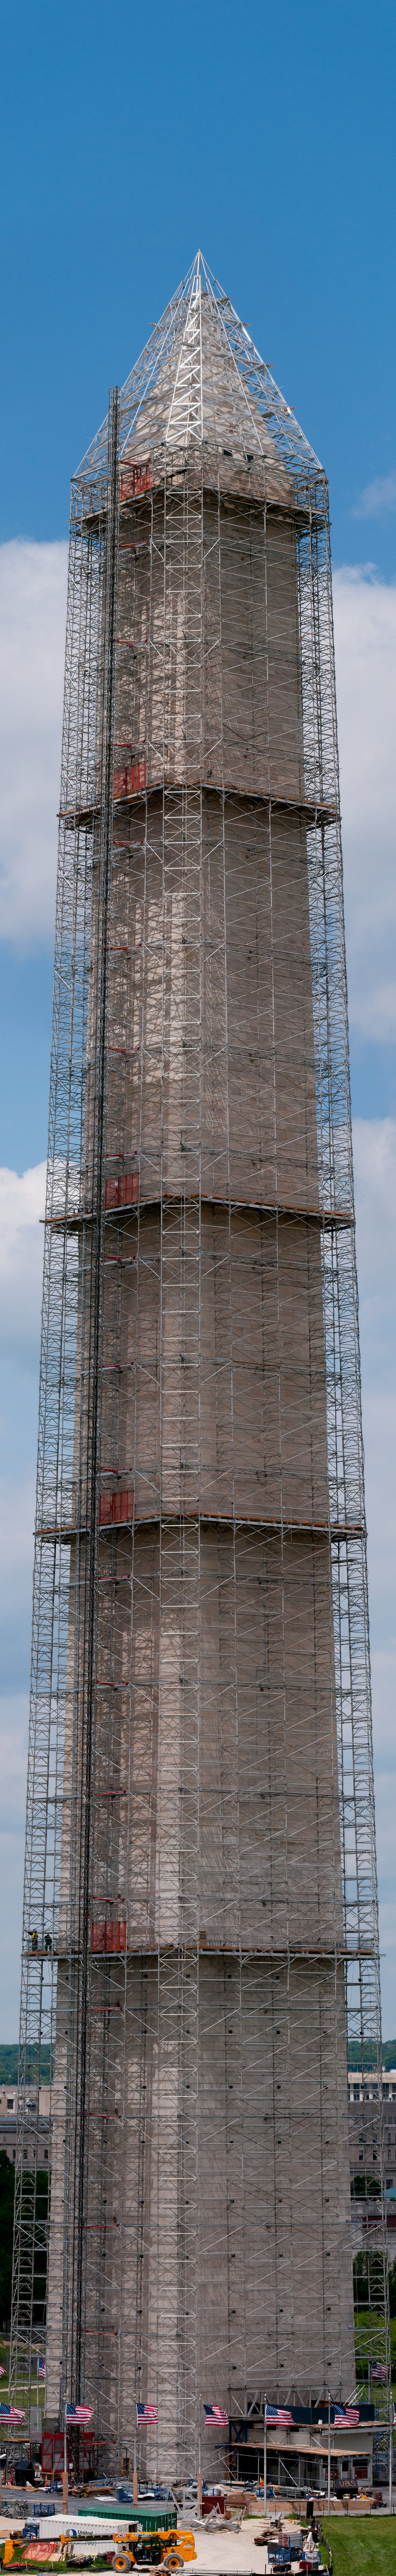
(Virtual vertical panorama, Original size viewing is suggested.) The Washington Monument, in Washington, D.C. with the tip of the monument’s scaffold in place, on Monday, May 13, 2013. This is part of the process to repair the damage from the August 23, 2011, 5.8-magnitude earthquake. The Washington Monument is located adjacent to the U.S. Department of Agriculture Yates Building.